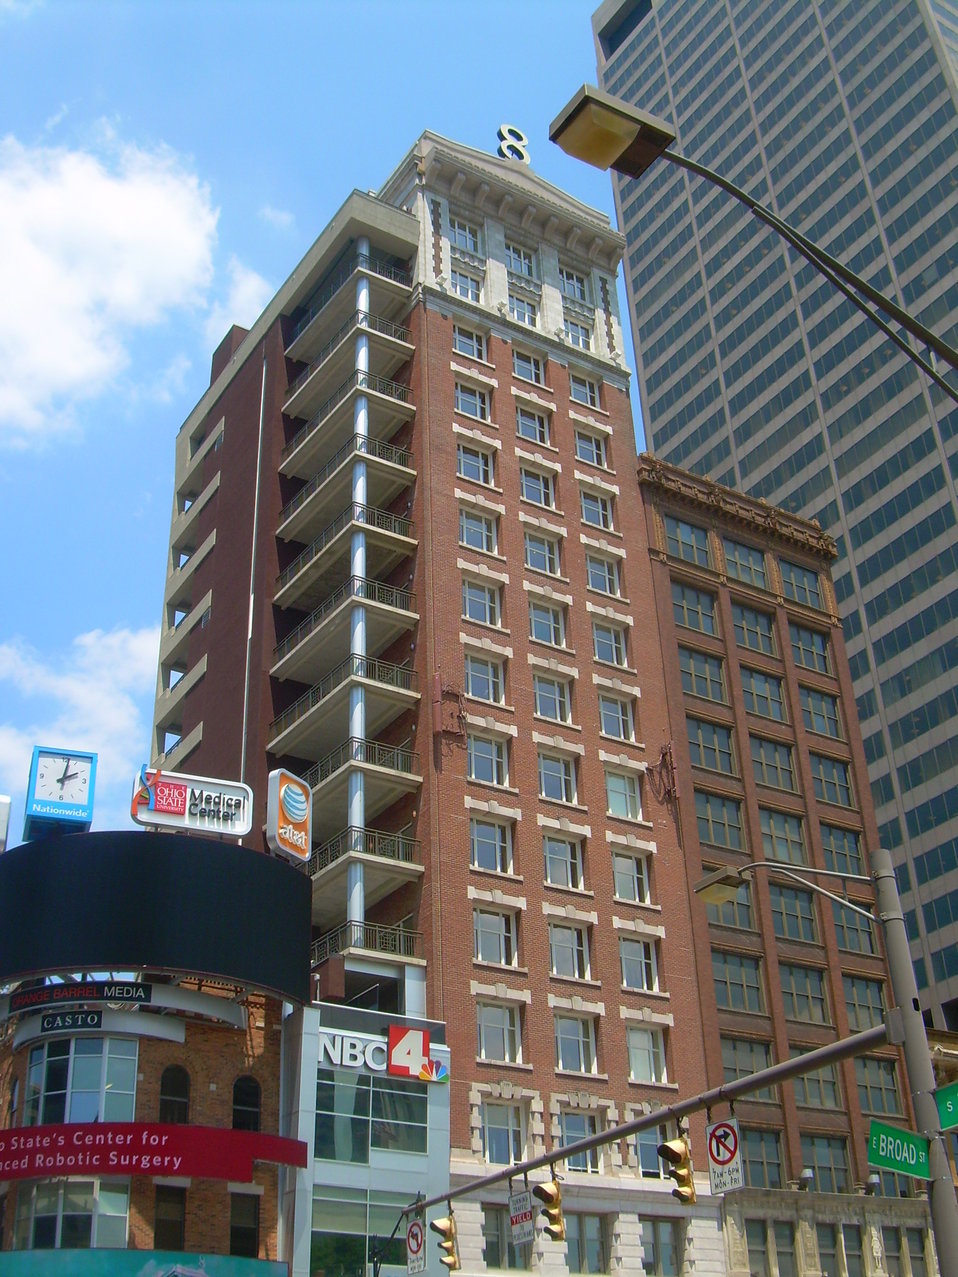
8 on the Square, Downtown, Columbus, Ohio